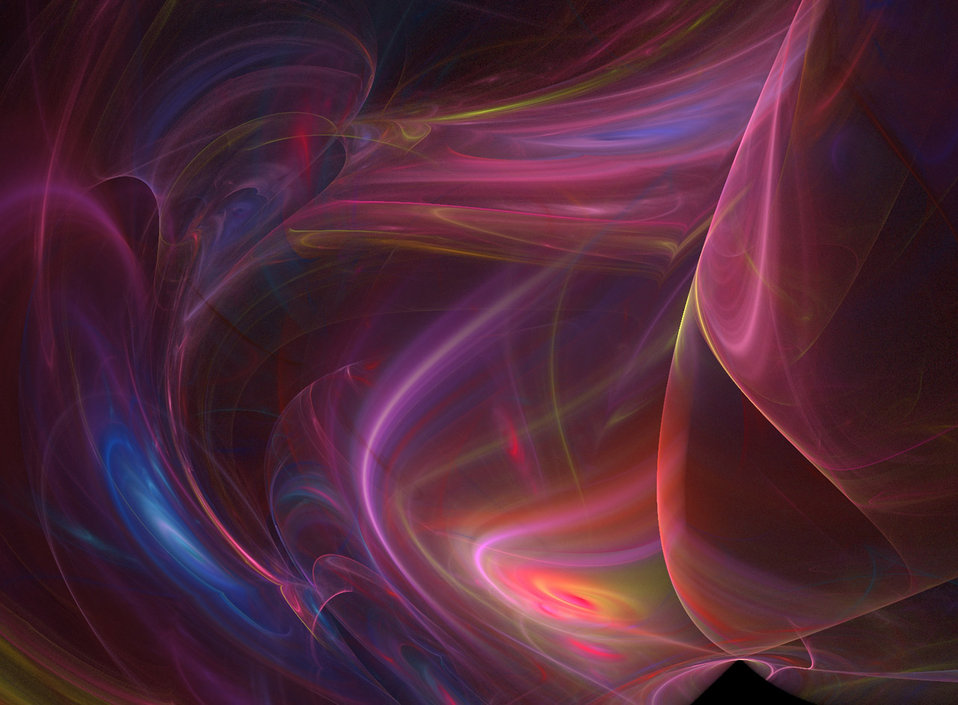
Beautiful drapes

Good for a background in lovely colours of purple, red and blue.